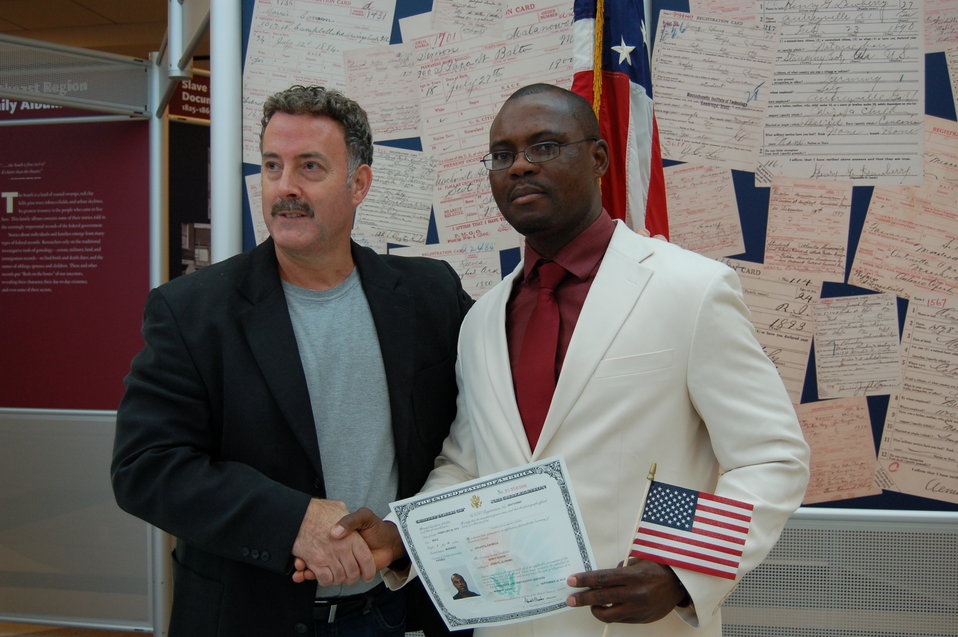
New Citizens